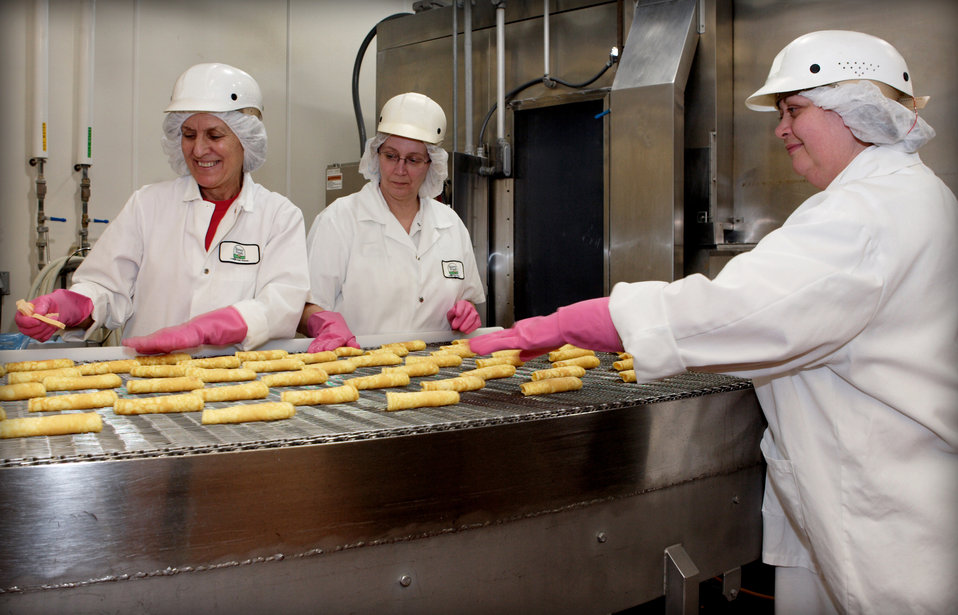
2005 Baldrige Award Winner, Sunny Fresh Foods, Inc.